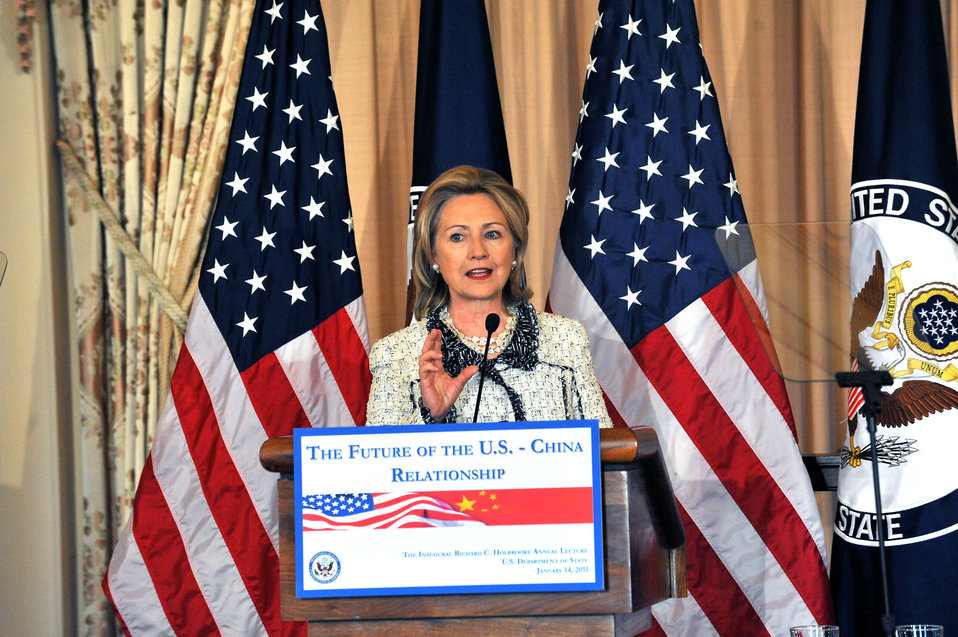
Secretary Clinton Delivers Remarks for the Inaugural Richard C. Holbrooke Lecture

U.S. Secretary of State Hillary Rodham Clinton delivers remarks for the Inaugural Richard C. Holbrooke Lecture: Broad Vision of U.S.- China Relations in the 21st Century, in the Benjamin Franklin Room in the U.S. Department of State in Washington, D.C., on January 14, 2011.